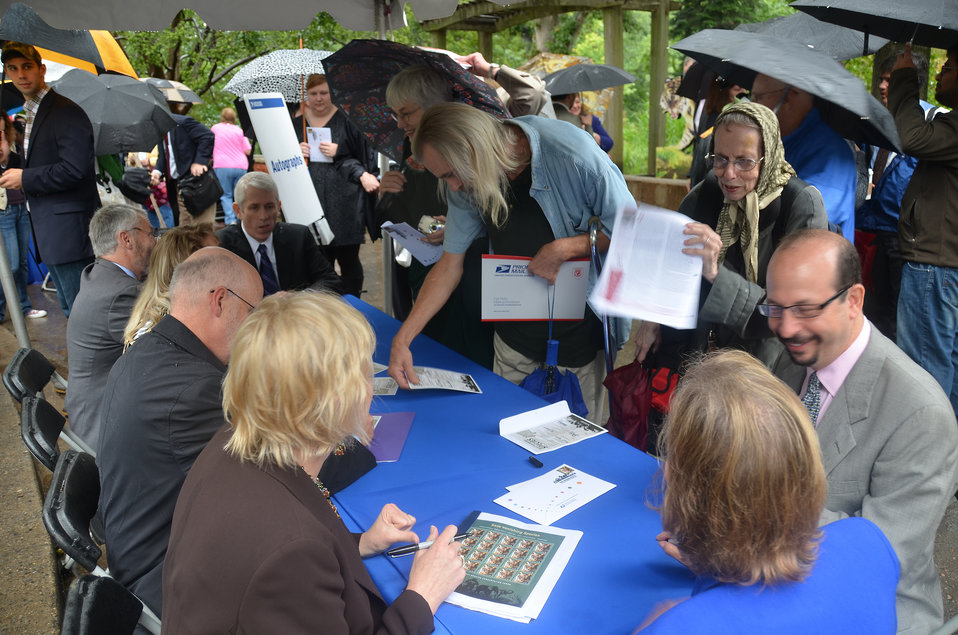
Save Vanishing Species Stamp First Day of Issue